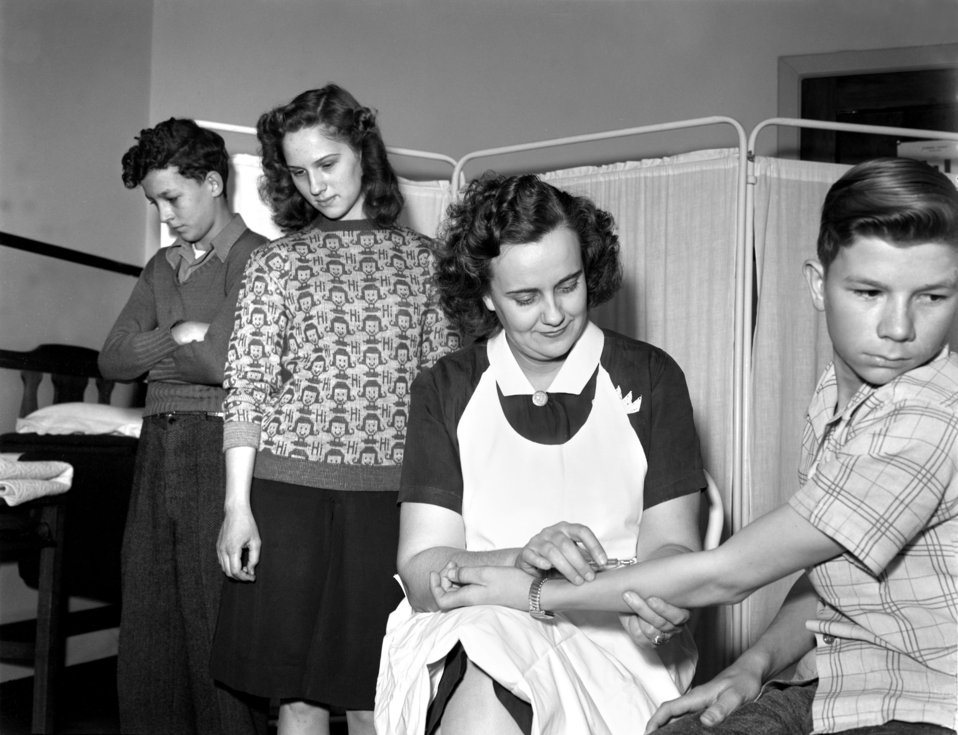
School Nurse Oak Ridge High School 1947

3290-4a DOE photo Ed Westcott 2-12-1947 Oak Ridge Tennessee